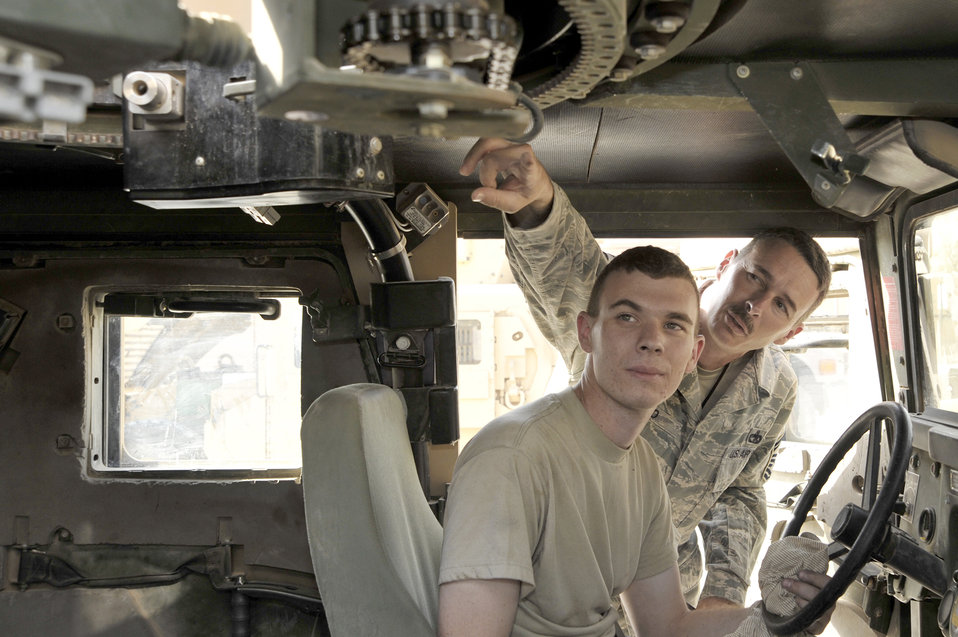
Following Dad's footsteps

Senior Master Sgt. CJ Slifko and his son, Airman 1st Class Ryan Slifko, inspect the turret chain on a Humvee June 19, 2010, at Sather Air Base, Iraq. Sergeant Slifko is the vehicle fleet manager for the 447th Expeditionary Logistics Readiness Squadron. Airman Slifko is a vehicle mechanic with the 447th ELRS.